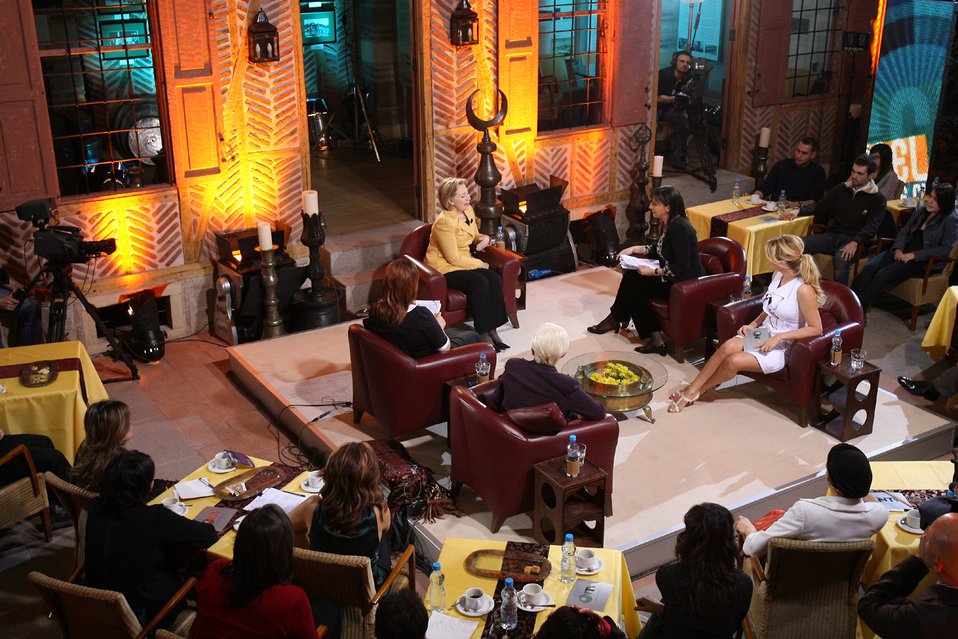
'Come and Join Us” Television Program

U.S. Secretary of State Hillary Rodham Clinton talks with the hosts of NTV’s “Come and Join Us” television program. From left to right: Pinar Kur, Mujde Ar, Secretary Clinton, Cigdem Anad, Aysun Kayadi. Rahmi Koc Museum, Ankara, Turkey March 7, 2009.